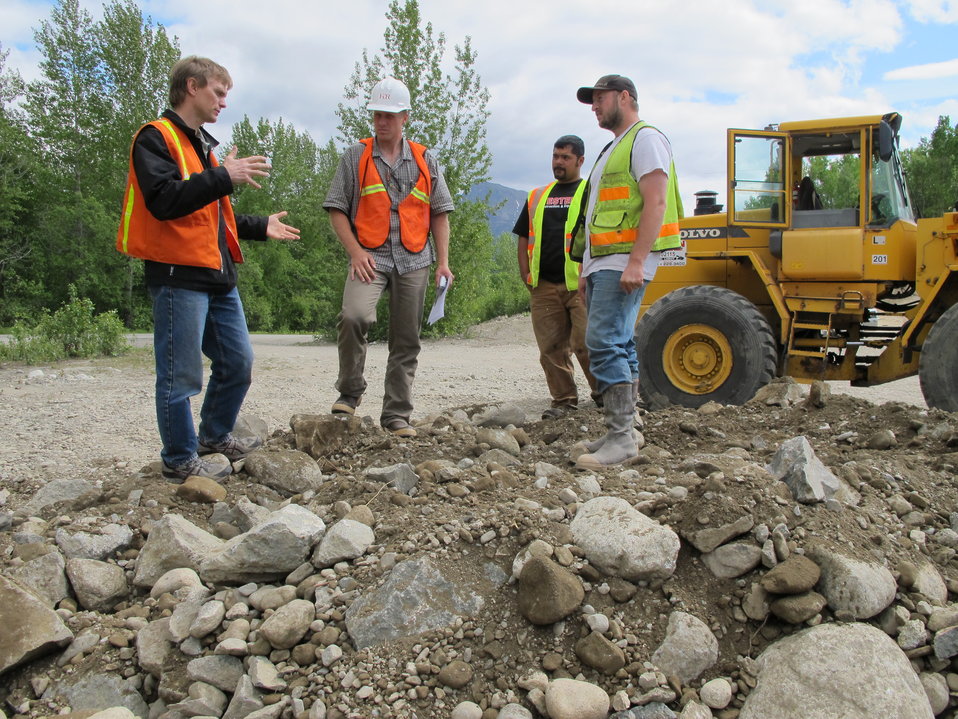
Streambed for Eska Creek crossing

Service Fish Passage Engineer Bill Rice coordinates with contractors at Eska Creek culvert site about fill used to recreate the stream channel under the road. USFWS/Katrina Mueller